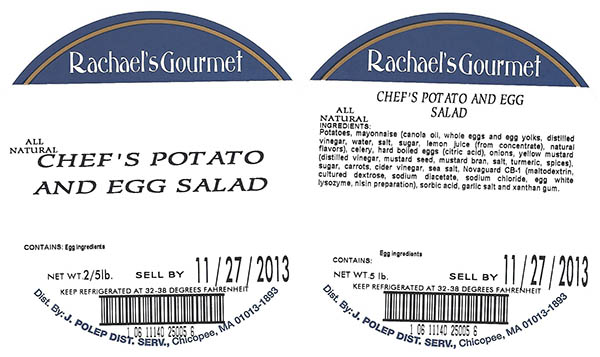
RECALLED – Prepared salads

October 24, 2013 – Product Recall – Boston Salads and Prepared Foods Recalling Ready-To-Eat Products Because of Possible Health Risk.